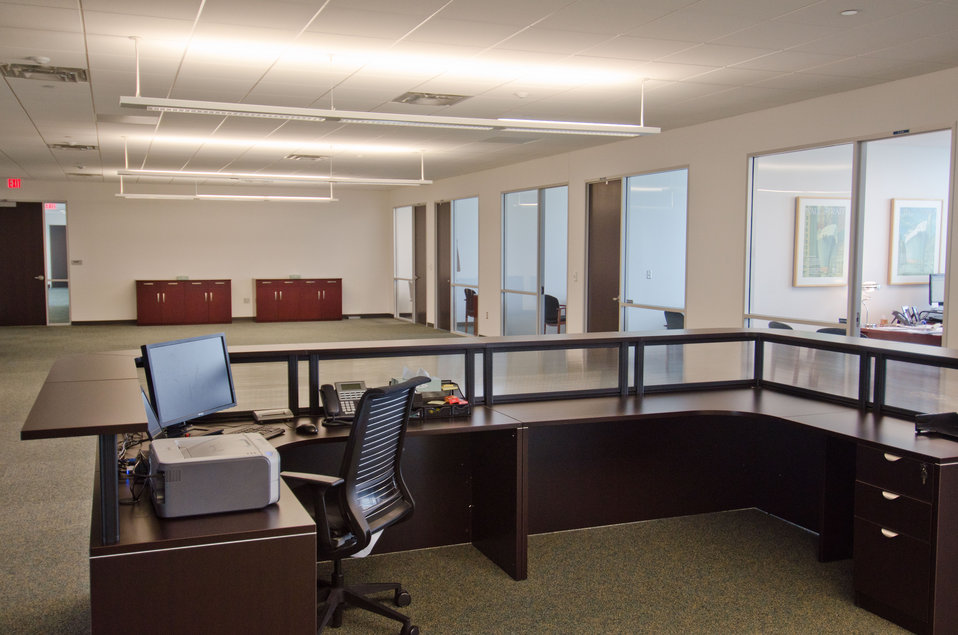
Management offices at Unilife, a medical device company focused on the design, development, manufacture and supply of a proprietary range of retractable syringes on Monday, April 20, 2011 in York, PA. In partnership with Sanofi-aventis, Mikron Group, and MDMA, U.S. Department of Agriculture Rural Development was able to guarantee $18,000,000 through its Business and Industry Guaranteed Loan Program to construct a custom-built, global headquarters and commercial production facility in York, Pennsylvania. The 165,000 sq. ft. facility was completed in late 2010 and can accommodate future growth as well as the Company’s projected demand from pharmaceutical and healthcare companies for its proprietary range of Unifill ready-to-fill (prefilled) and Unitract general purpose safety syringes. Stage one of the facility is designed to accommodate the production of up to 400 million Unilife syringes per year and to meet stringent pharmaceutical standards for primary drug containers. Adjacent to the manufacturing facility is Unilife’s global headquarters that support administrative, marketing, new product development, quality laboratories and other operational functions. Unilife, which first arrived in Pennsylvania in 2006. The company has doubled its employees for the past three years. There are approximately 150 employees, and they expect to double the number by 2015.